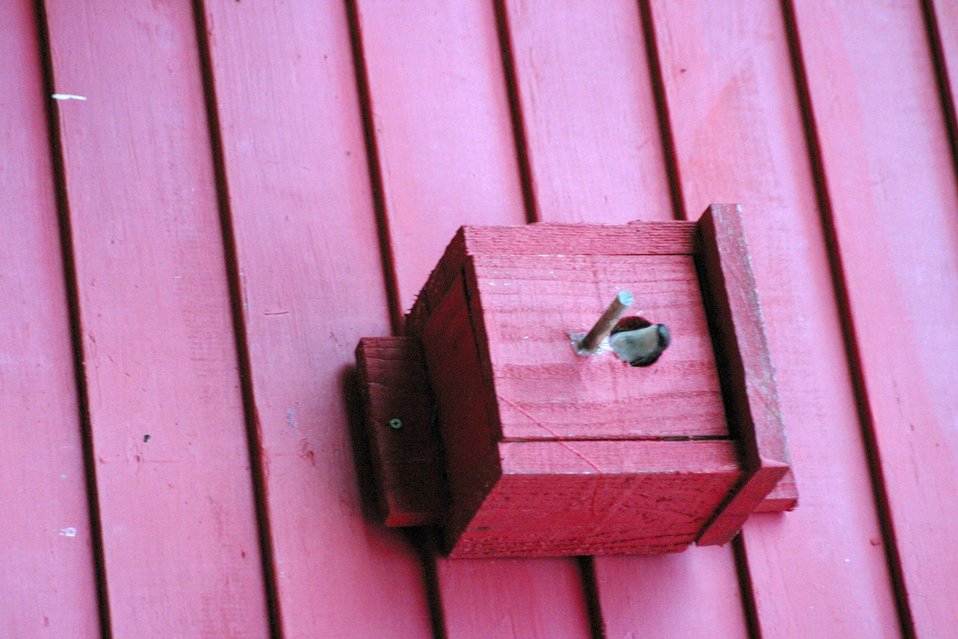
Bird Boxes provide nesting habitat.